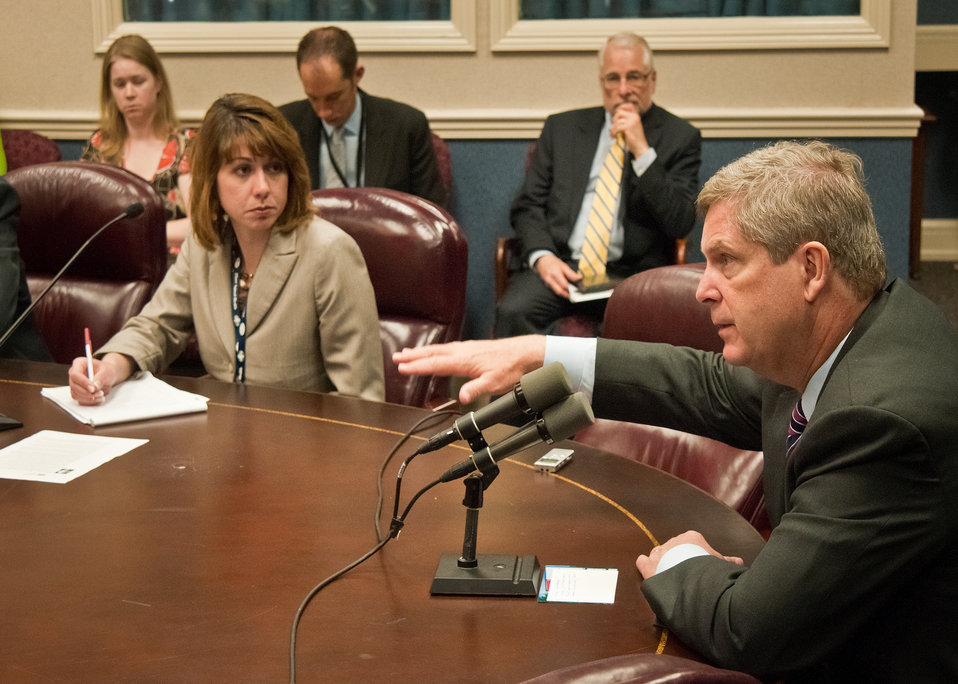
Agriculture Secretary Tom Vilsack answers a question posed by a member of the National Association of Farm Broadcasters at the United States Department of Agriculture in Washington, DC, on Tuesday, May 5, 2011. Left of Secretary Vilsack is Lindsay Hill, Farm Journal Media and President of the National Association of Farm Broadcasters, Justin DeJong, Deputy Director Press Operations and Dave White, Chief, Natural Resources Conservation Service. The NAFB has an annual pilgrimage to Washington, DC, where members have an opportunity to discuss agriculture issues directly with the Secretary of Agriculture and members of his cabinet.